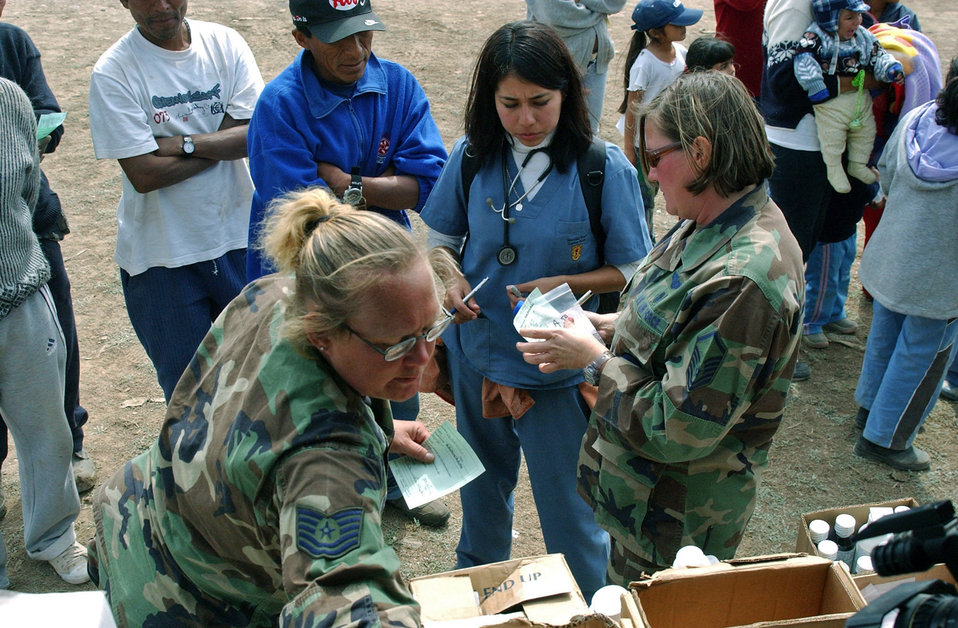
Relief in Peru

Tech. Sgt. Mellisa Walker (left) and Master Sgt. Deborah Davis distribute medicine to patients as part of the Joint Task Force-Bravo medical humanitarian mission Aug. 21 in Pisco, Peru. An 8.0 magnitude earthquake struck the region Aug. 15. The medical team was assisted by local paramedics who explained to patients when to take their medicine.